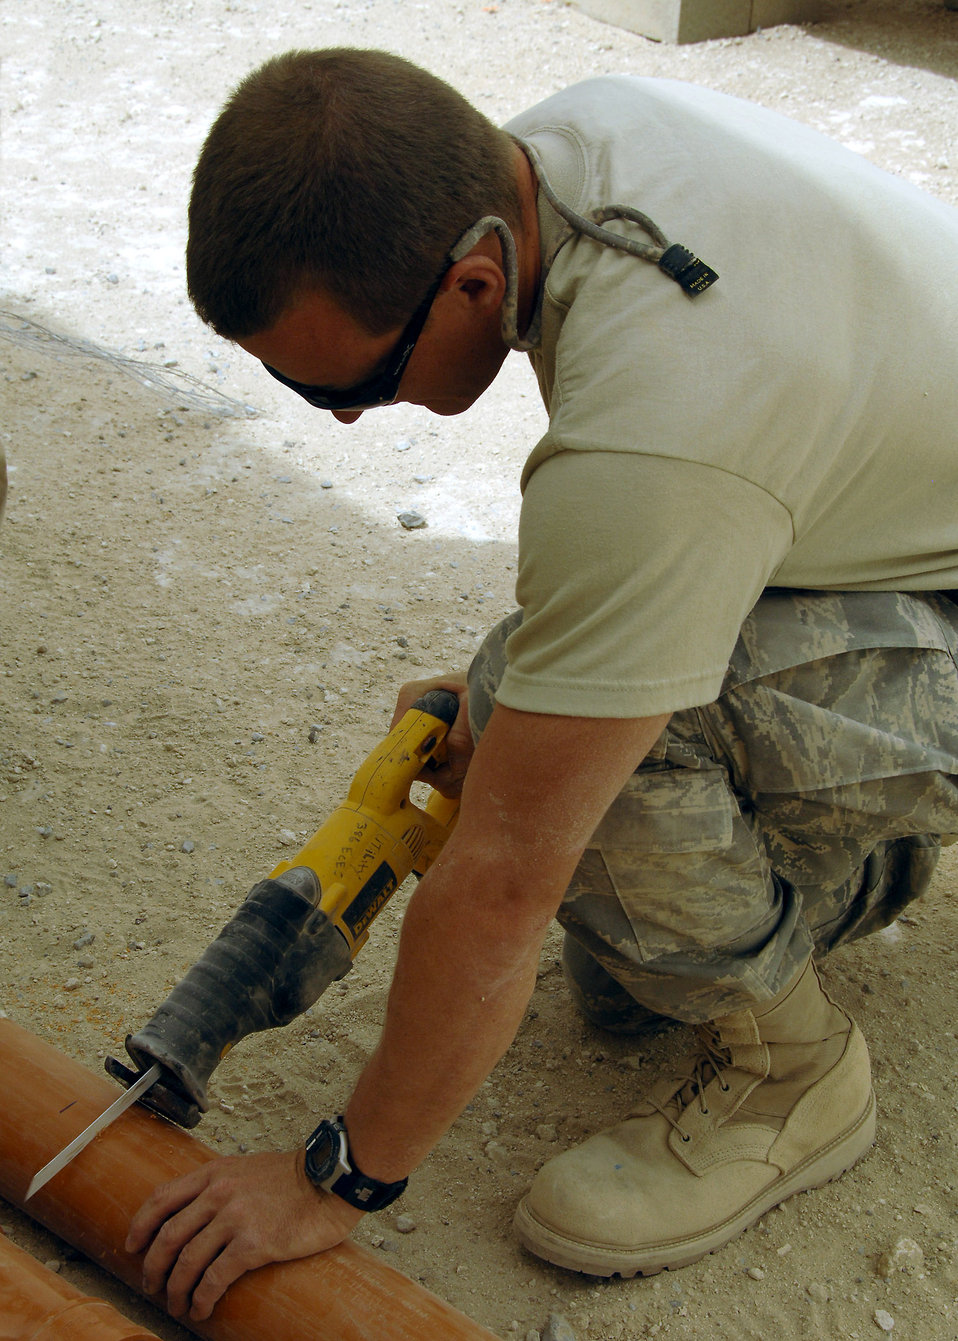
Working dog kennels receive massive renovation

Senior Airman Mike Hughes, deployed to the 386th Expeditionary Civil Engineer Squadron, cuts a PVC pipe during construction on a new K-9 kennel on July 11 at a base in Southwest Asia. The 386th Expeditionary Civil Engineer Squadron is completing a project to increase the square footage of the K-9 kennels for the 386th Expeditionary Security Forces Squadron. Airman Hughes is deployed from the 169th Fighter Wing, McEntire Joint National Guard Base, S.C.